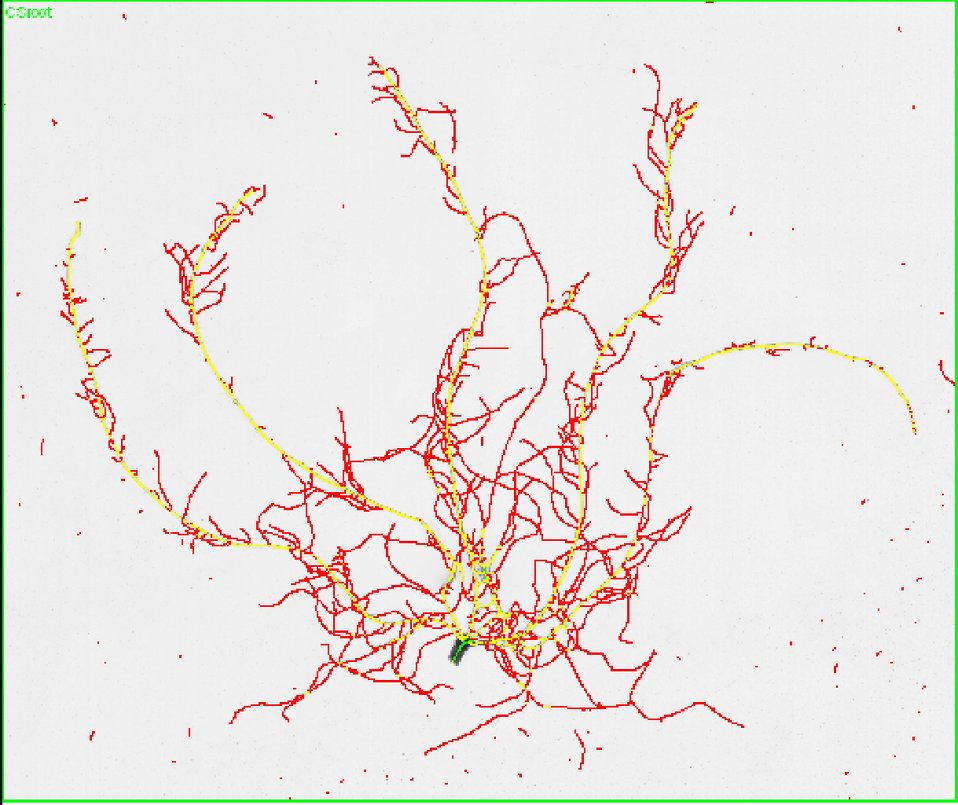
Digital scan of the roots of a wheat plant treated with a biocontrol bacteria strain. Root measurements are made from the scan and this information is used to help U.S. Department of Agriculture (USDA) Agricultural Research Service (ARS) researchers evaluate the strain’s effectiveness against root pathogens.